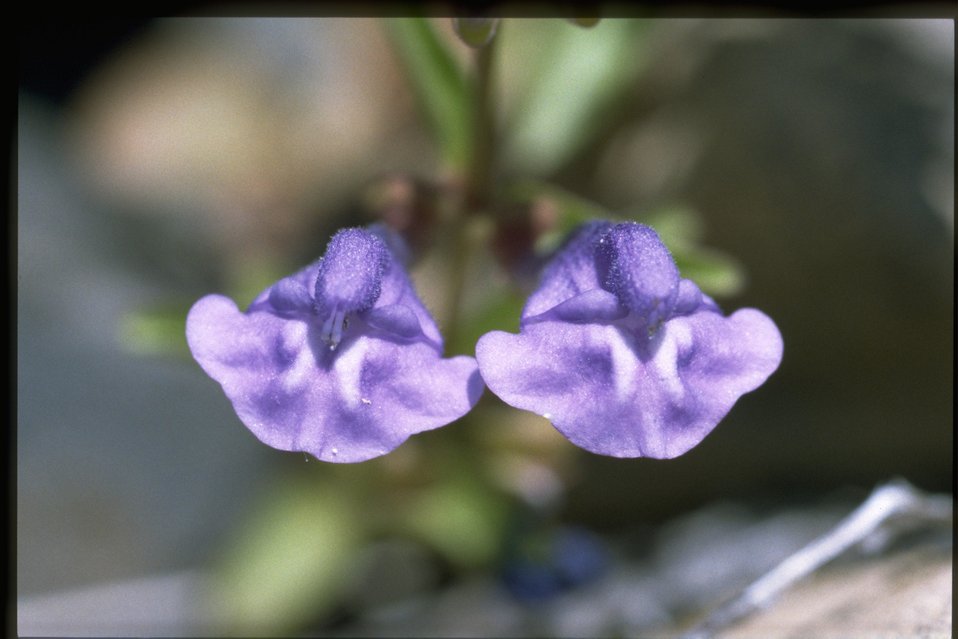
Closeup shot of Narrowleaf skullcap (Scutellaria angustifolia).